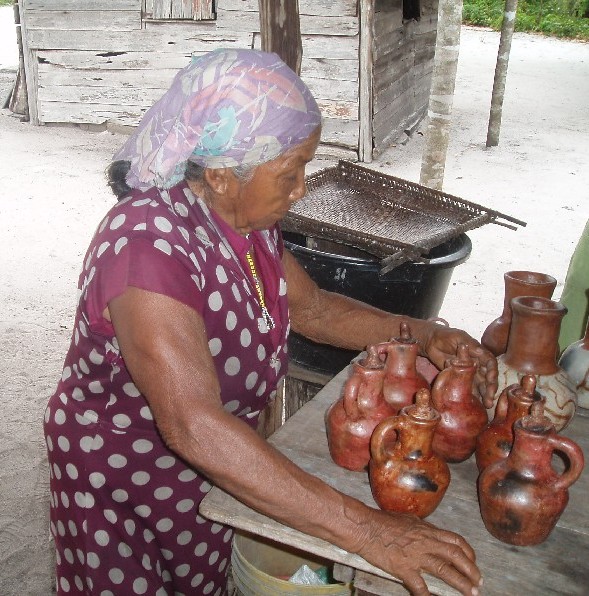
Cabendadorp (Suriname): mevrouw Toenae met haar keramiek. Foto: Els Moor. Toestemming voor publicatie in publiek domein.